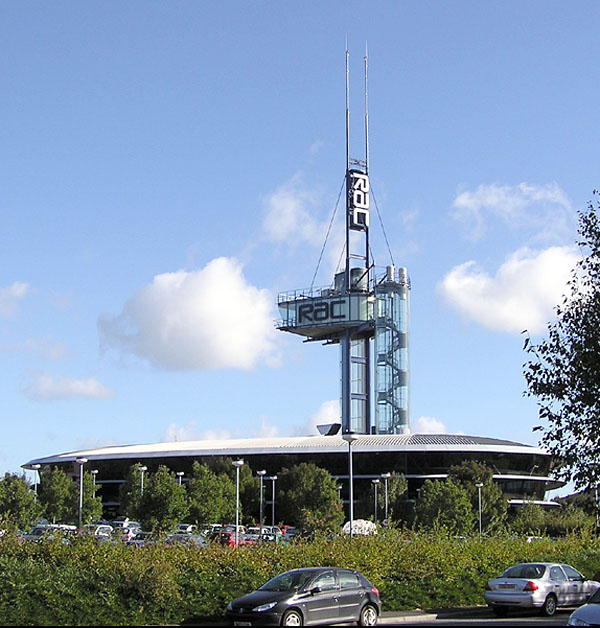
The RAC Tower, a landmark at the Bradley Stoke (Bristol, England) offices of the RAC.